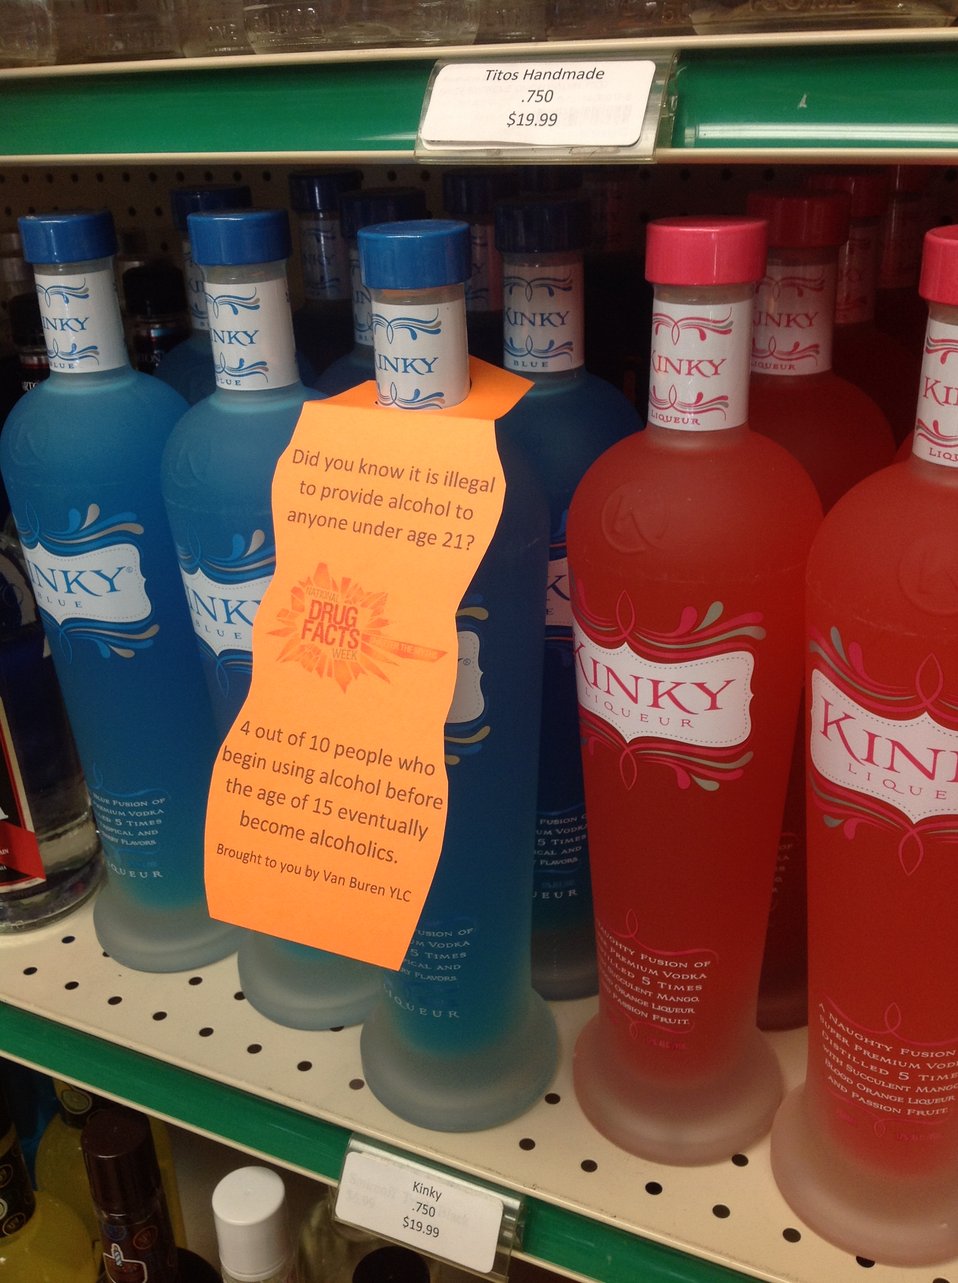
Getting the Facts Out There

Teenagers from the Van Buren County SAFE Coalition's, Youth Leadership Council (YLC) in Keosauqua, Iowa participate in various events during National Drug Facts Week, 2014.